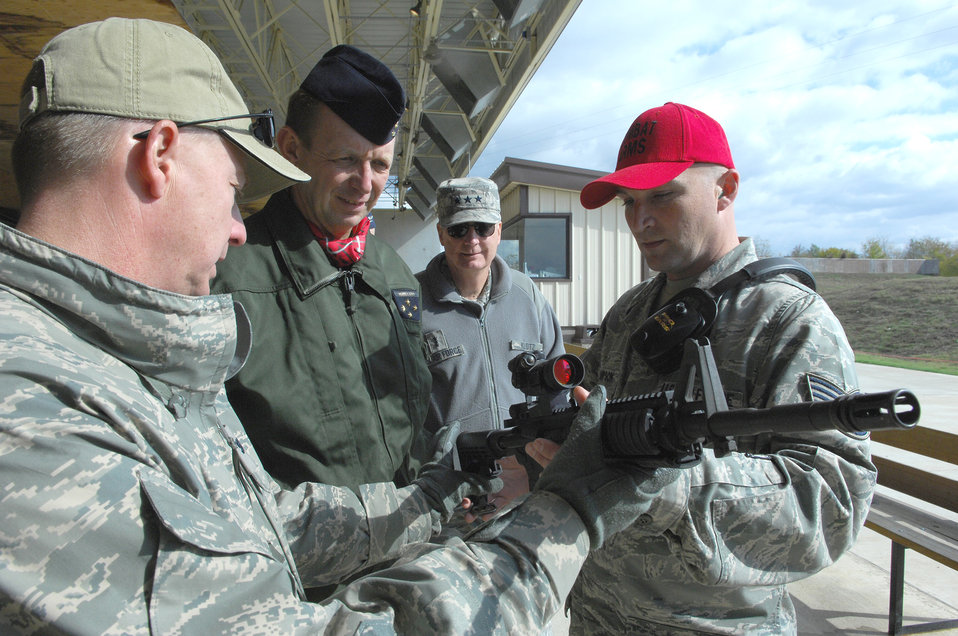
Global Strike Command officials build partnership with French

Col. Lynden Skinner (left), and Tech. Sgt. Lee Thompson show Lt. Gen. Paul Fouilland the mechanisms of an M-4 carbine rifle before a test fire Nov. 16, 2010. Colonel Skinner is the Air Force Global Strike Command Security Forces Division chief, Sergeant Thompson is the 2nd Security Forces Squadron armory NCO in charge and General Fouilland is the French Strategic Air Forces commander-in-chief.